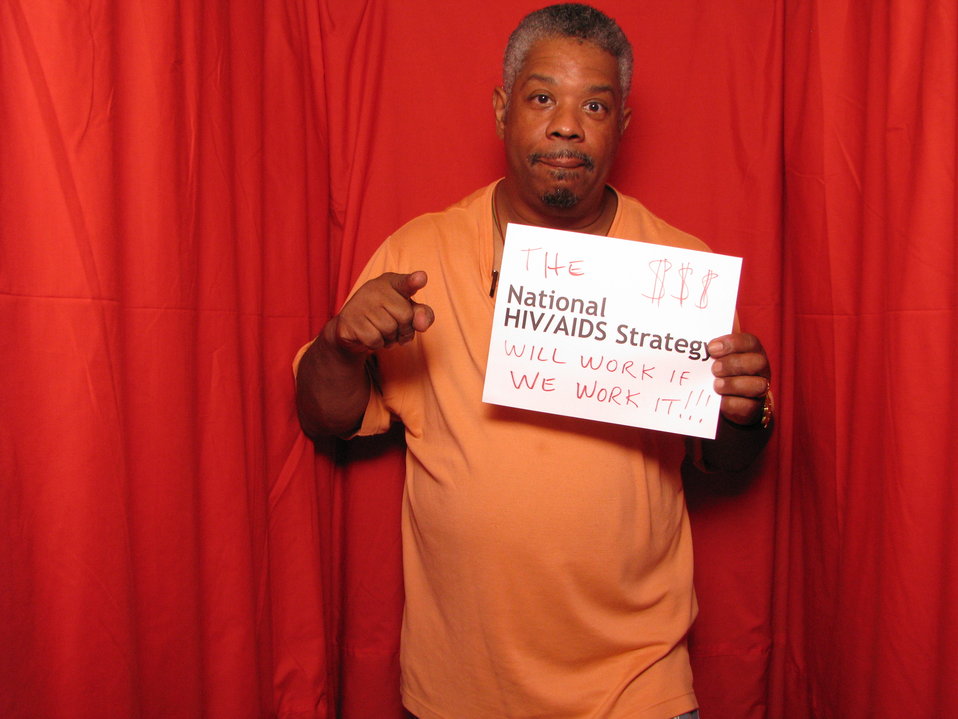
The National HIV/AIDS Strategy will work if we work it!!!

From the AIDS.gov photo booth at the U.S. Conference on AIDS, September 2010 (Orlando, FL).